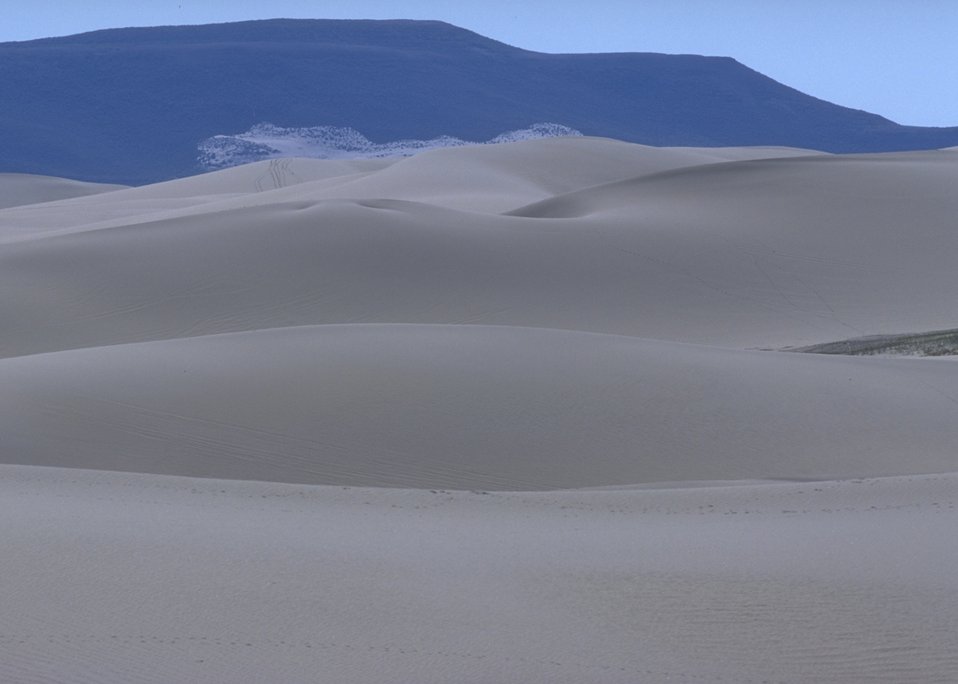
OHV Sand Dunes Area, Rock Springs Field Office.